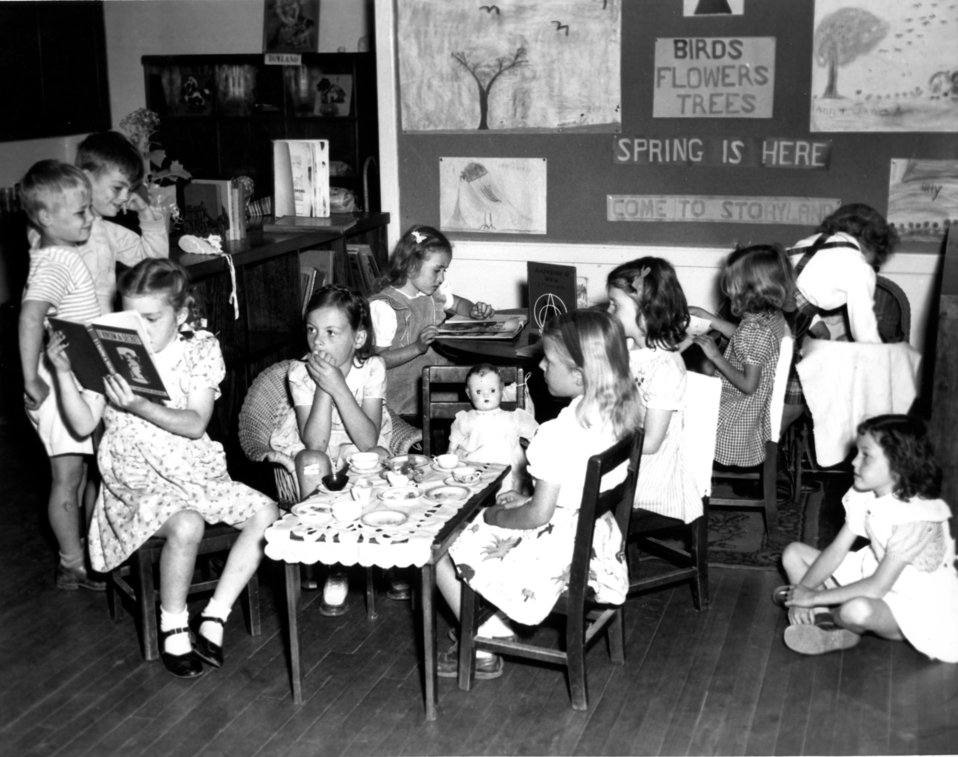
Schools at Oak Ridge